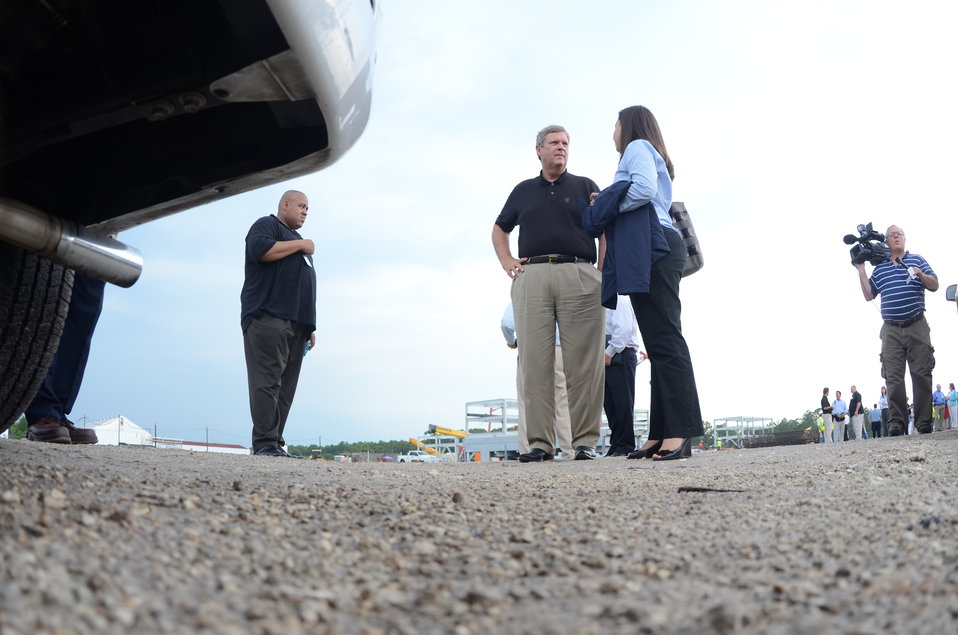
Agriculture Secretary Tom Vilsack visited the waste-to-energy bioprocessing facility under construction in Florida today to announce several small grants to support research into renewable fuels. The INEOS New Planed BioEnergy facility in Vero Beach, Florida, was granted a conditional Agriculture loan guarantee earlier this year to help build and operate a biorefinery capable of producing 8 million gallons per year of cellulosic ethanol and 6 megawatts of electricity.